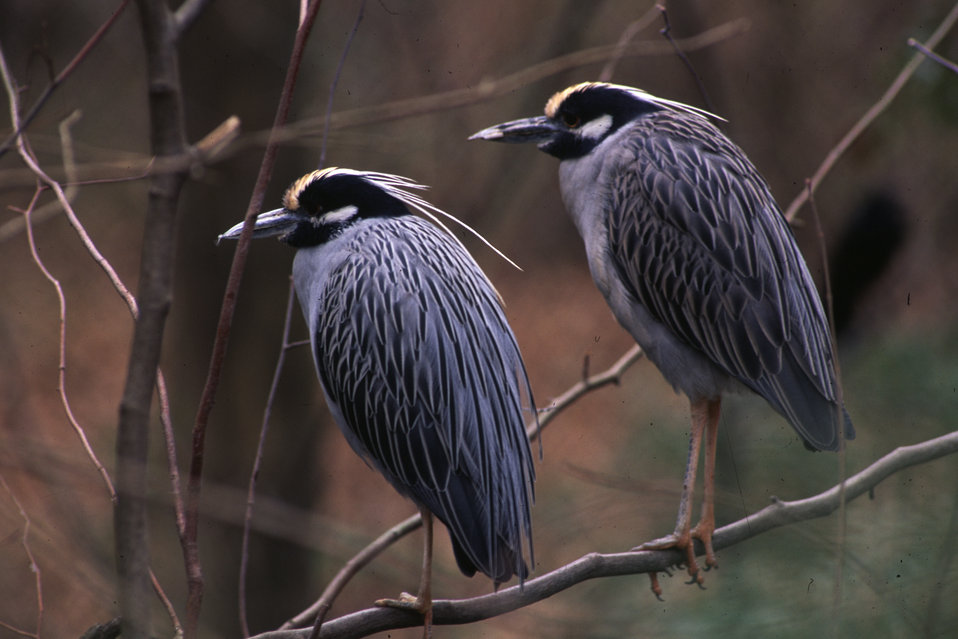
Wading birds

Eastern Shore of Virginia National Wildlife Refuge, VA.